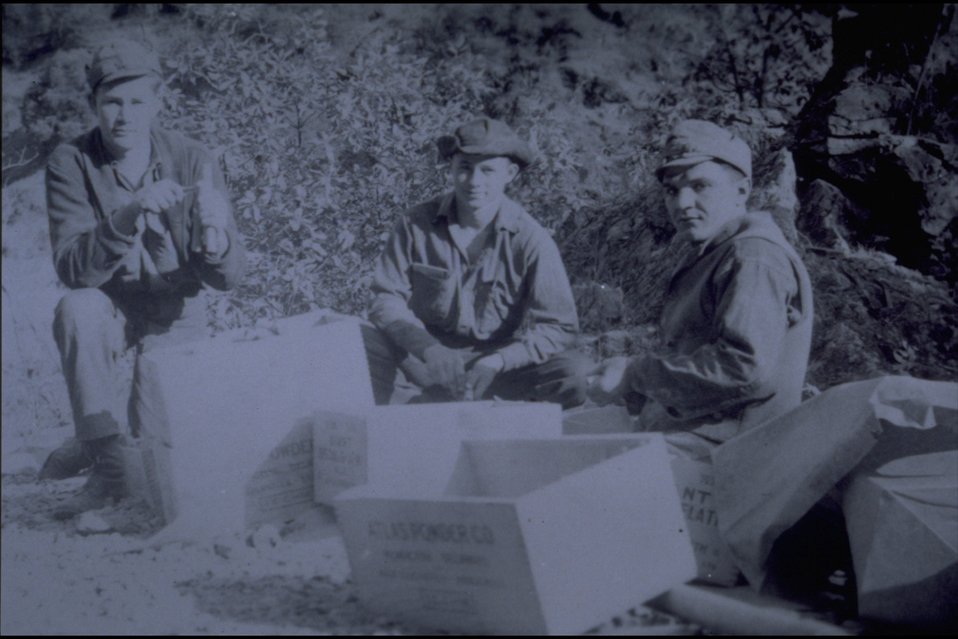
Rogue River - Just below Indian Mary Park. CCC Boys going through powder boxes.